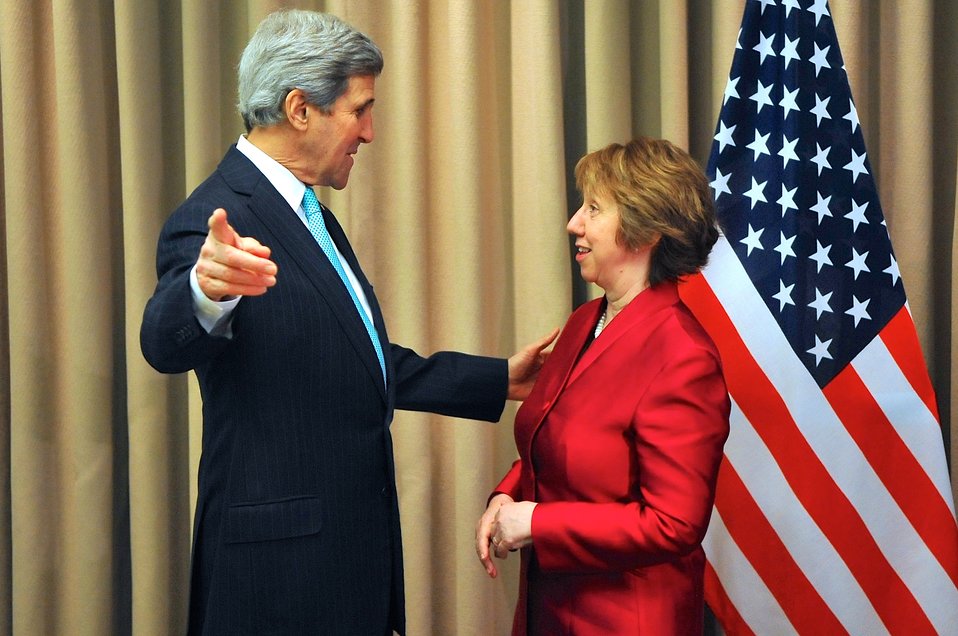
Secretary Kerry Greets EU High Representative Ashton Before Ukraine Talks in Geneva

U.S. Secretary of State John Kerry greets European Union High Representative Catherine Ashton before the two joined with Russian and Ukrainian officials for four-way talks about Ukraine in Geneva, Switzerland, on April 17, 2014.